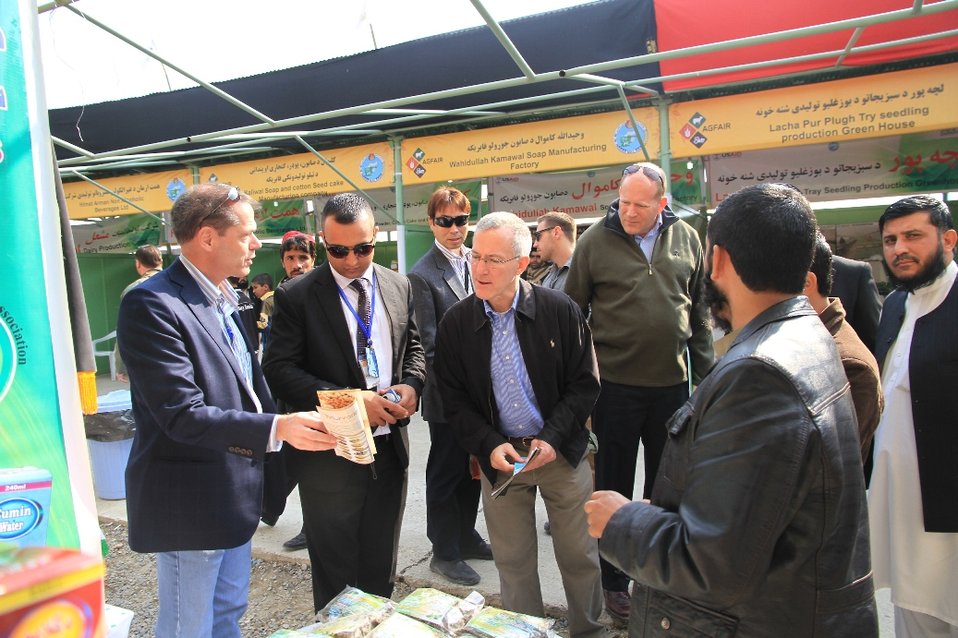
Ag.Fair, October 2013

USAID officials inspect advertising materials from the Mint Oil Production Company, at Kabul International Ag.Fair, October, 2013